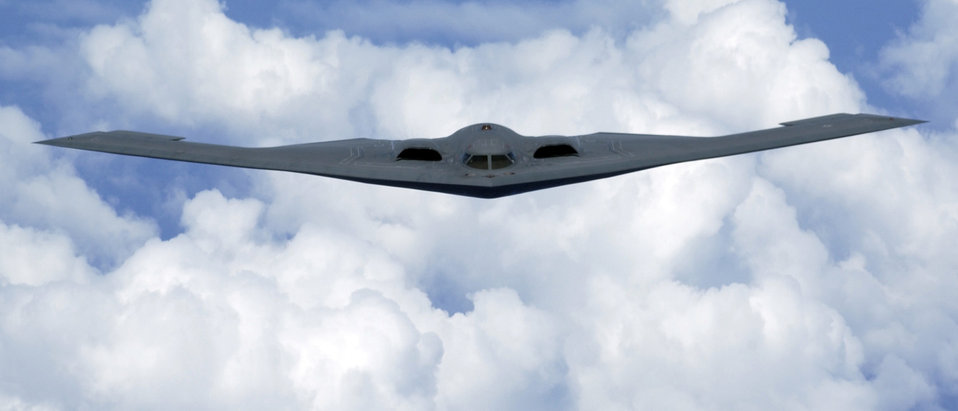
A Pacific spirit

OVER THE PACIFIC OCEAN -- A B-2 Spirit soars through the sky after a refueling mission here May 2. The B-2 is assigned to the 393rd Expeditionary Bomb Squadron from Whiteman Air Force Base, Mo. The bomber is currently deployed to Andersen AFB, Guam, as part of a continuous bomber presence in the Asia-Pacific region.